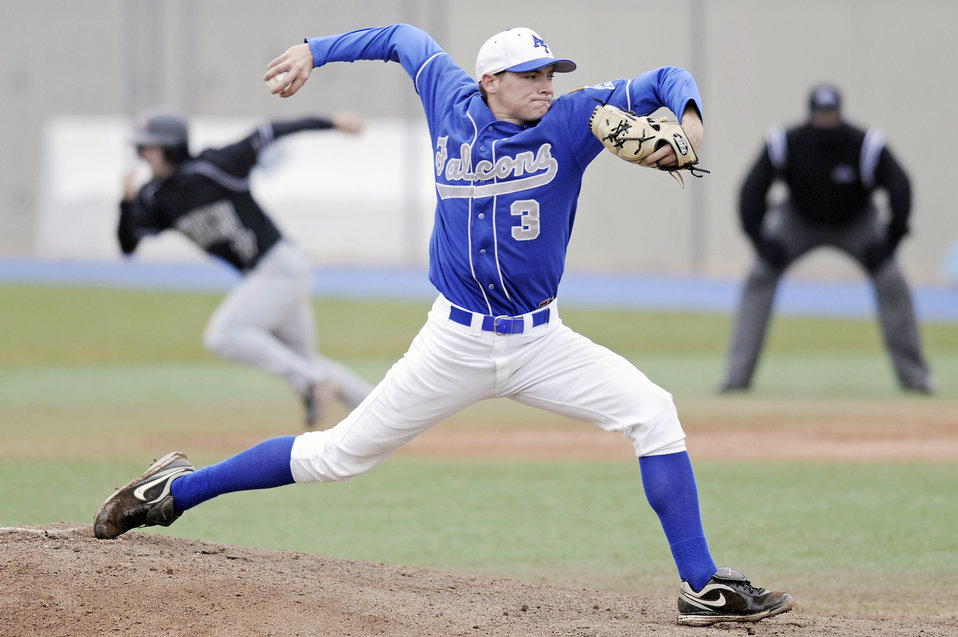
Here's the pitch

U.S. Air Force Academy junior pitcher Alex Truesdale delivers a pitch during the 20-13 loss to the University of Nevada, Las Vegas at Falcon Field April 25, 2009, at the Academy in Colorado Springs, Colo. The Falcons had 18 hits on the day with three homers, but dropped to a 14-25 overall record.